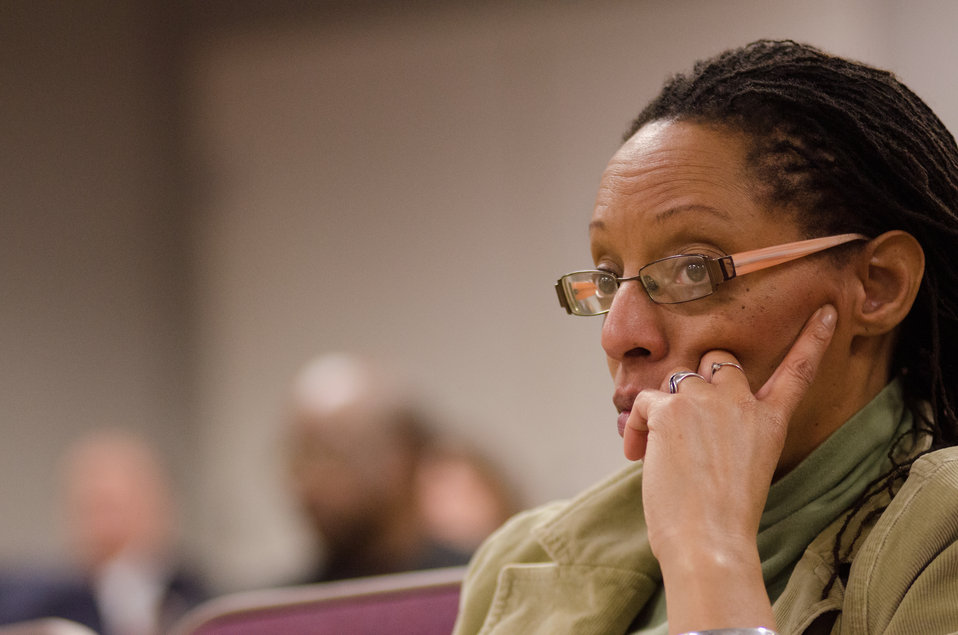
Farmers listened, questioned, took notes and gained a better understanding of resources available to them, at the “Virginia State University (VSU), U.S. Department of Agriculture (USDA) and Virginia Farmers Working Together” outreach workshop in the VSU, L. Douglas Wilder building on Thursday, March 7, 2013, in Petersburg, VA. Farmers shared and learned new ways to produce more and conduct better practices and planning of their family agriculture businesses.